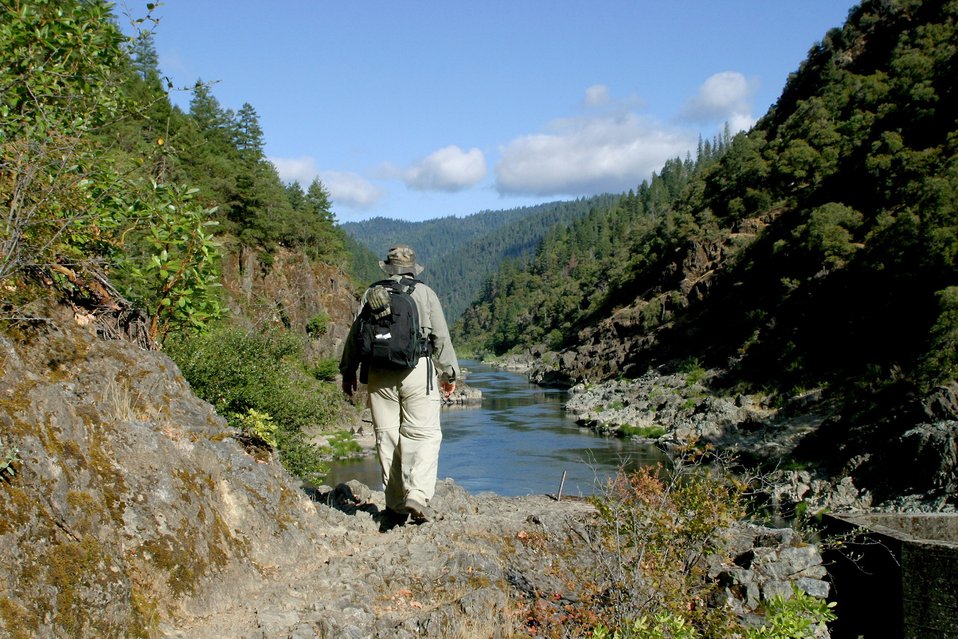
Hiking Rainie Falls Trail between Grave Creek and Rainie Falls.